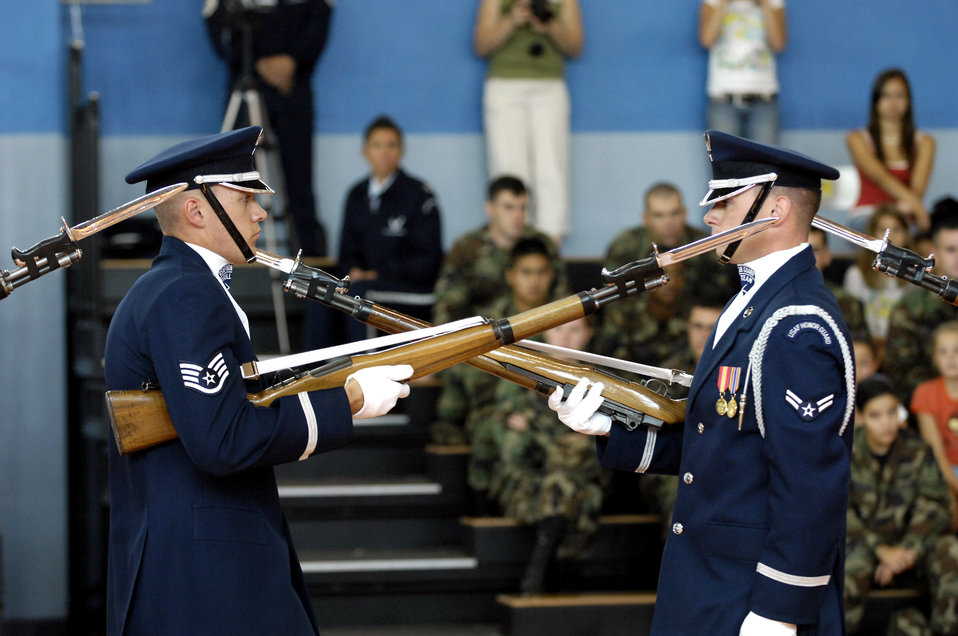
European tour

The U.S. Air Force Honor Guard Drill Team performs for Air Force members, their families and Italian local nationals at Aviano Air Base, Italy, July 30. During their European tour, the Drill Team visited five major Air Force installations and events in three countries.